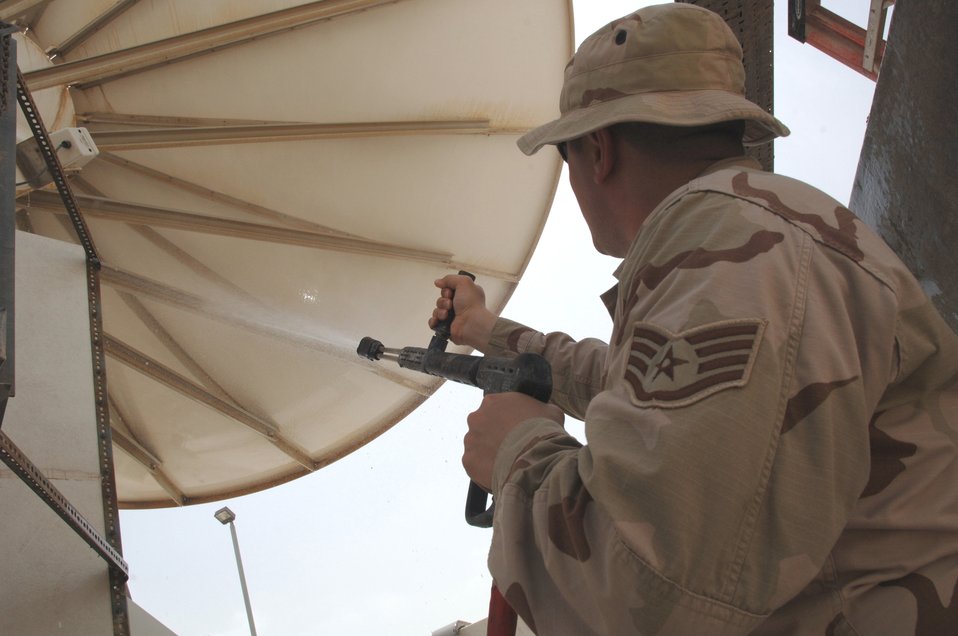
It's a wash

Staff Sgt. Michael Droddy power-washes satellite dishes at a deployed location in Southwest Asia on Sunday, March 19, 2006. The satellites provide communication capabilities to forward-deployed units. Sergeant Droddy is with the 379th Expeditionary Communications Squadron.